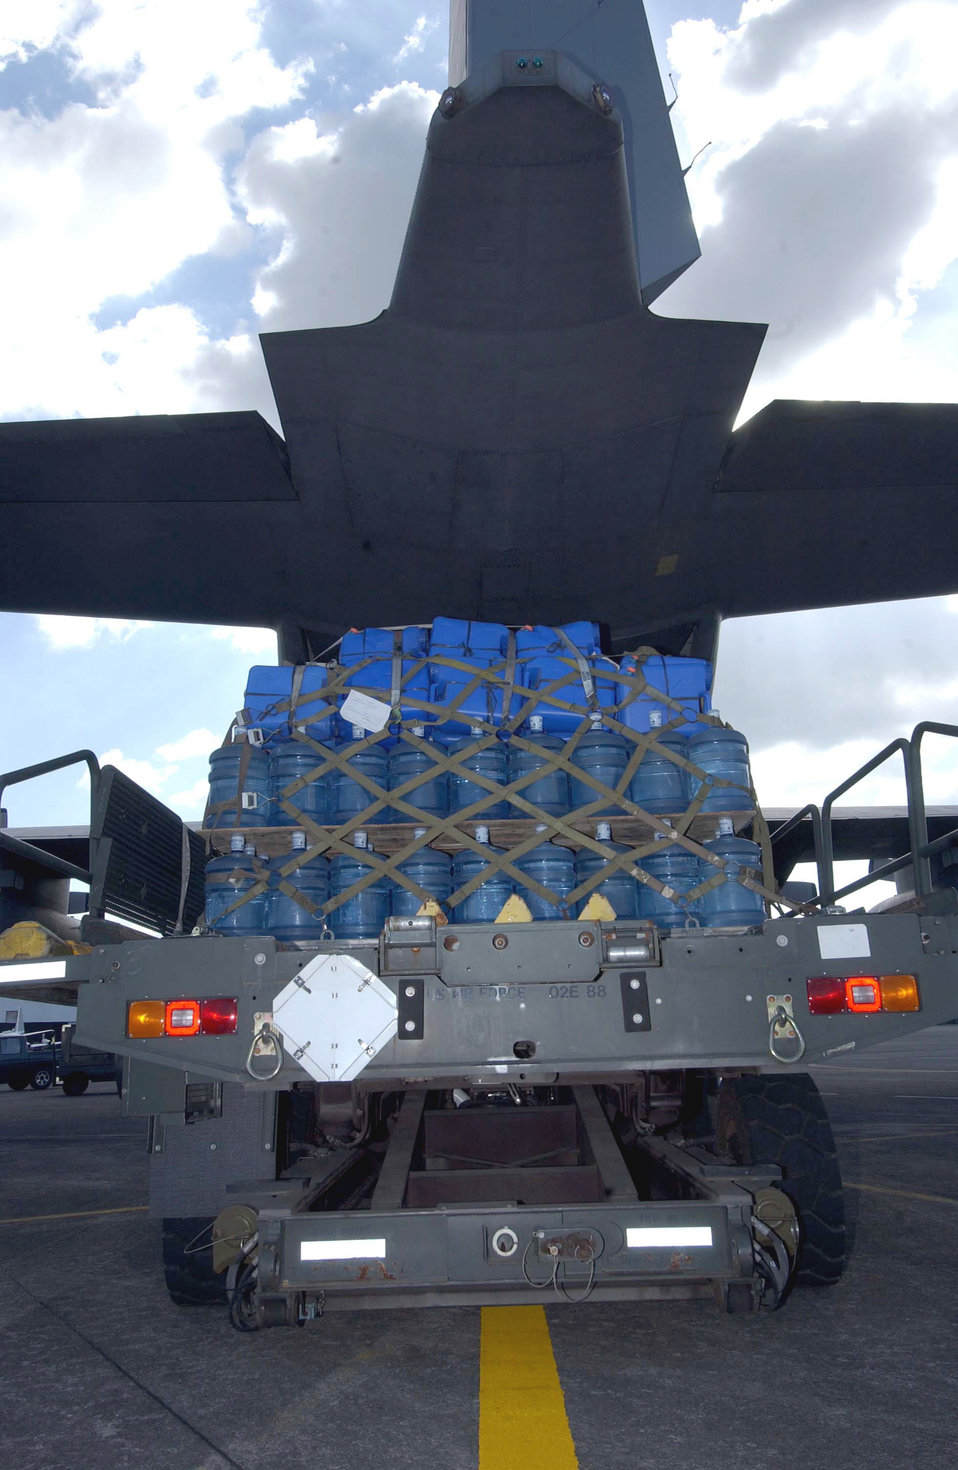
Philippine humanitarian relief

CLARK AIR BASE, Philippines (AFPN) -- Bottled water waits to be loaded onto a C-130 Hercules Feb. 20. Water and other relief supplies are being brought to Tacloban, a city on the northwestern part of the island of Leyte, where U.S. and Philippine armed forces are working together to help victims of the Feb. 17 landslide in the village of Guinsaugon.